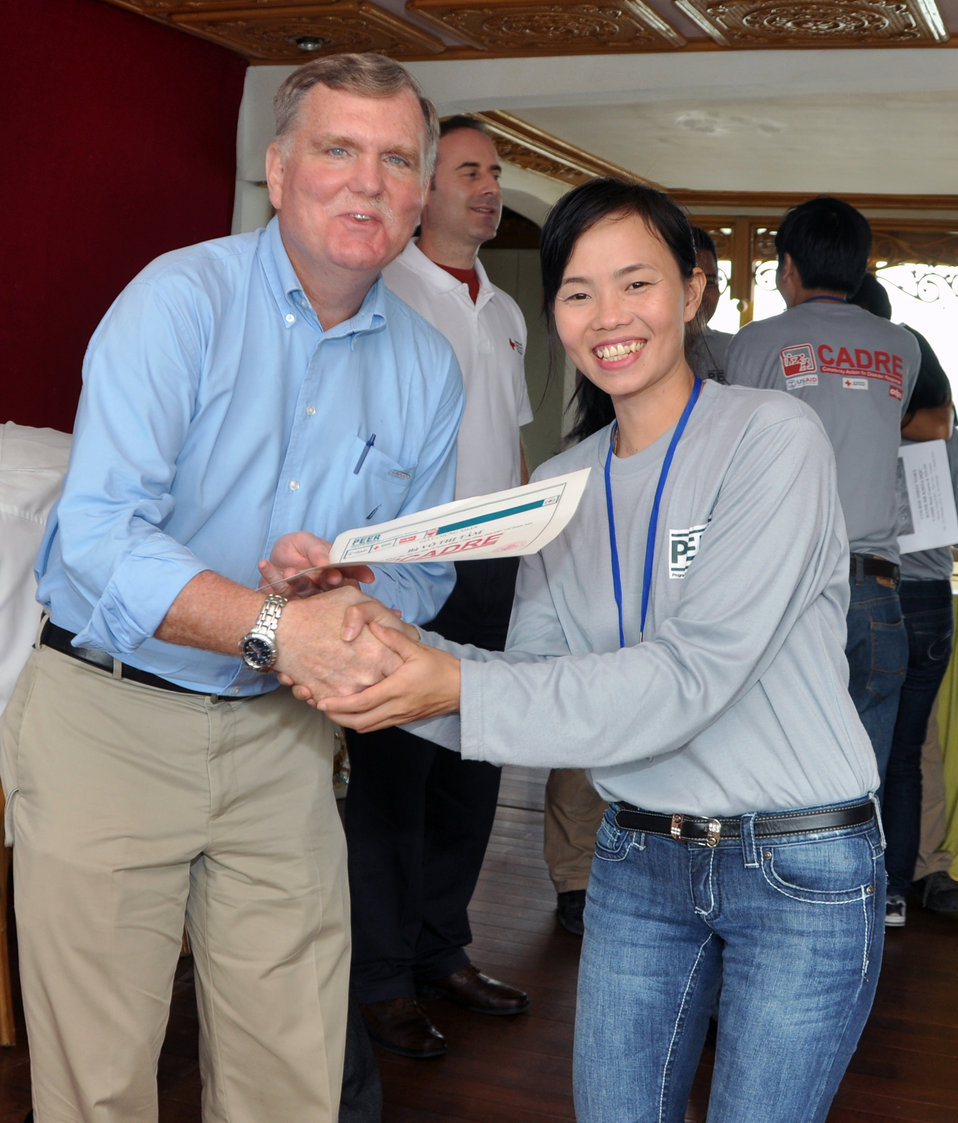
USAID Program Officer Director Michael Foster awards certificates to Red Cross workers.